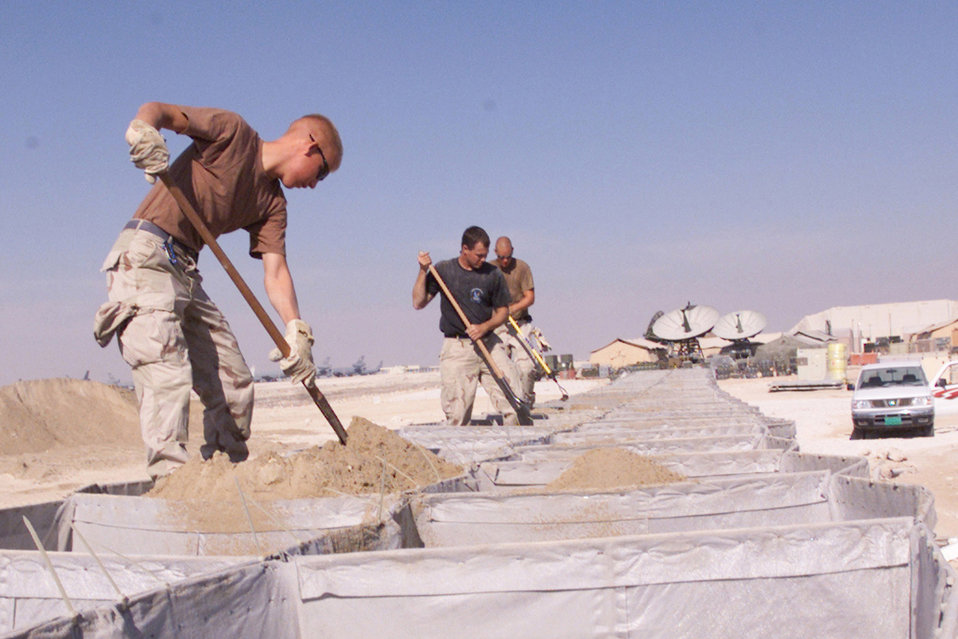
Building a wall

OPERATION ENDURING FREEDOM -- Airman 1st Class Derek Geske (left) and Senior Airman Randy Fox (center), both security forces specialists from the 366th Expeditionary Security Forces Squadron, and Airman 1st Class Boyd Clinton (right) a heavy equipment operator from the 366th Expeditionary Civil Engineering Squadron, pack sand into expandable barriers at an Operation Enduring Freedom location Dec. 28.